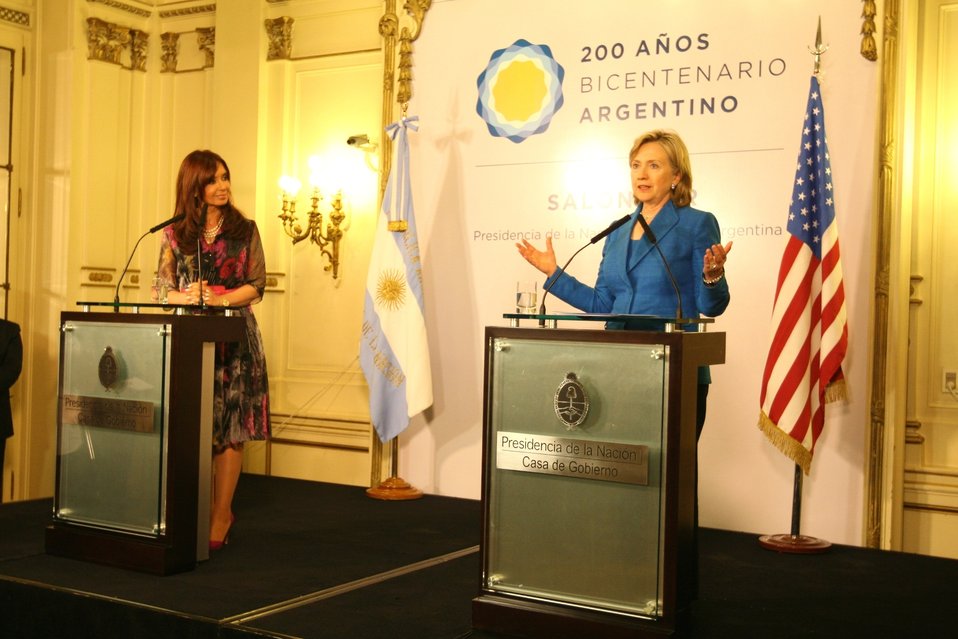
Secretary Clinton Visits Buenos Aires, Argentina

U.S. Secretary of State Hillary Rodham Clinton
Buenos Aires, Argentina March 1, 2010.